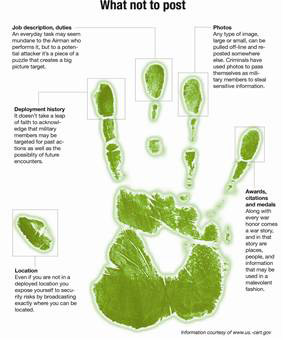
Officials urge caution on social networking Web sites

Air Force Instruction 35-101, Public Affairs policy and guidance, states: Each Air Force member or employee is responsible for obtaining the necessary review and clearance, starting with Public Affairs, before releasing a proposed statement, text or imagery to the public. This includes digital products being loaded on an unrestricted Web site.